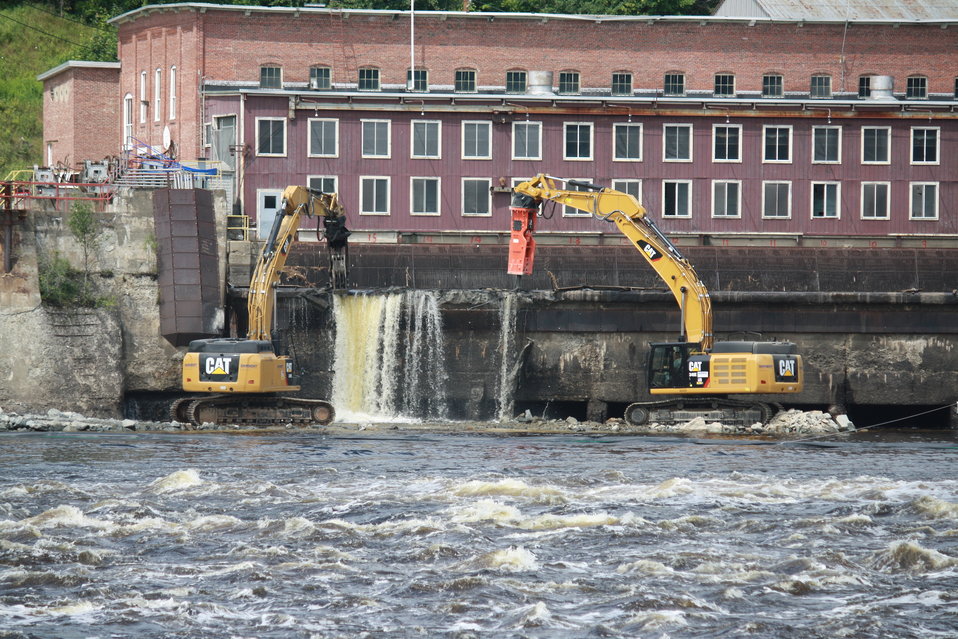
Veazie Dam Removal

Excavators begin the breaching of Veazie Dam. The removal of the 830-foot long, 30 foot high buttress-style Veazie Dam, built in 1913, is a monumental step in the Penobscot River Restoration Project, among the largest river restoration efforts in the nation’s history.